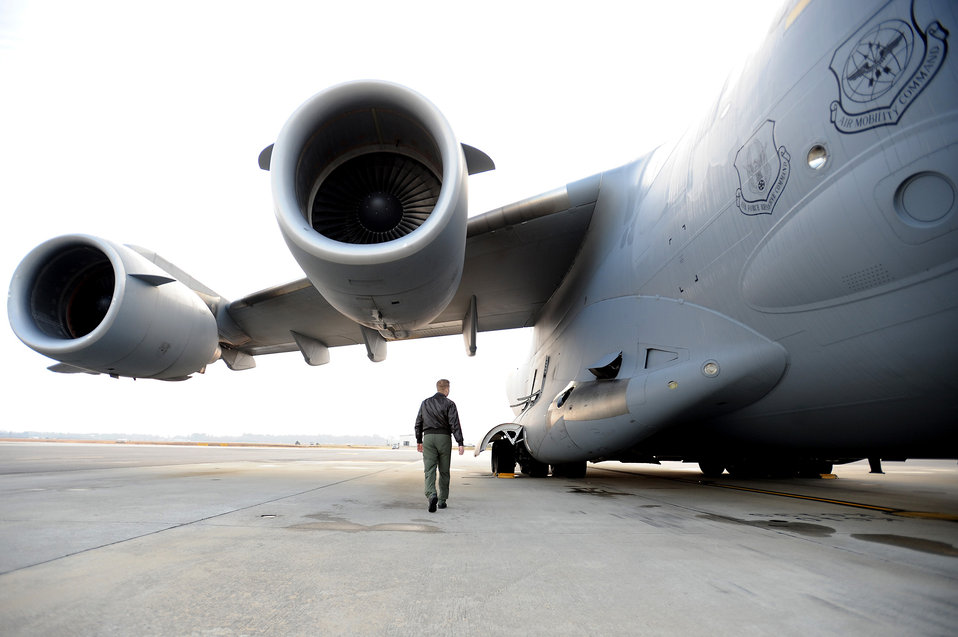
Charleston crew flies evaluation mission

Capt. Brad Bowyer conducts a pre-flight inspection of a C-17 Globemaster III on the flightline at Joint Base Charleston, S.C., Feb. 4, 2010. The mission was flown as part of an evaluation to keep aircrew skills sharp and ready to perform duties. Captain Bowyer is a pilot with the 17th Airlift Squadron.